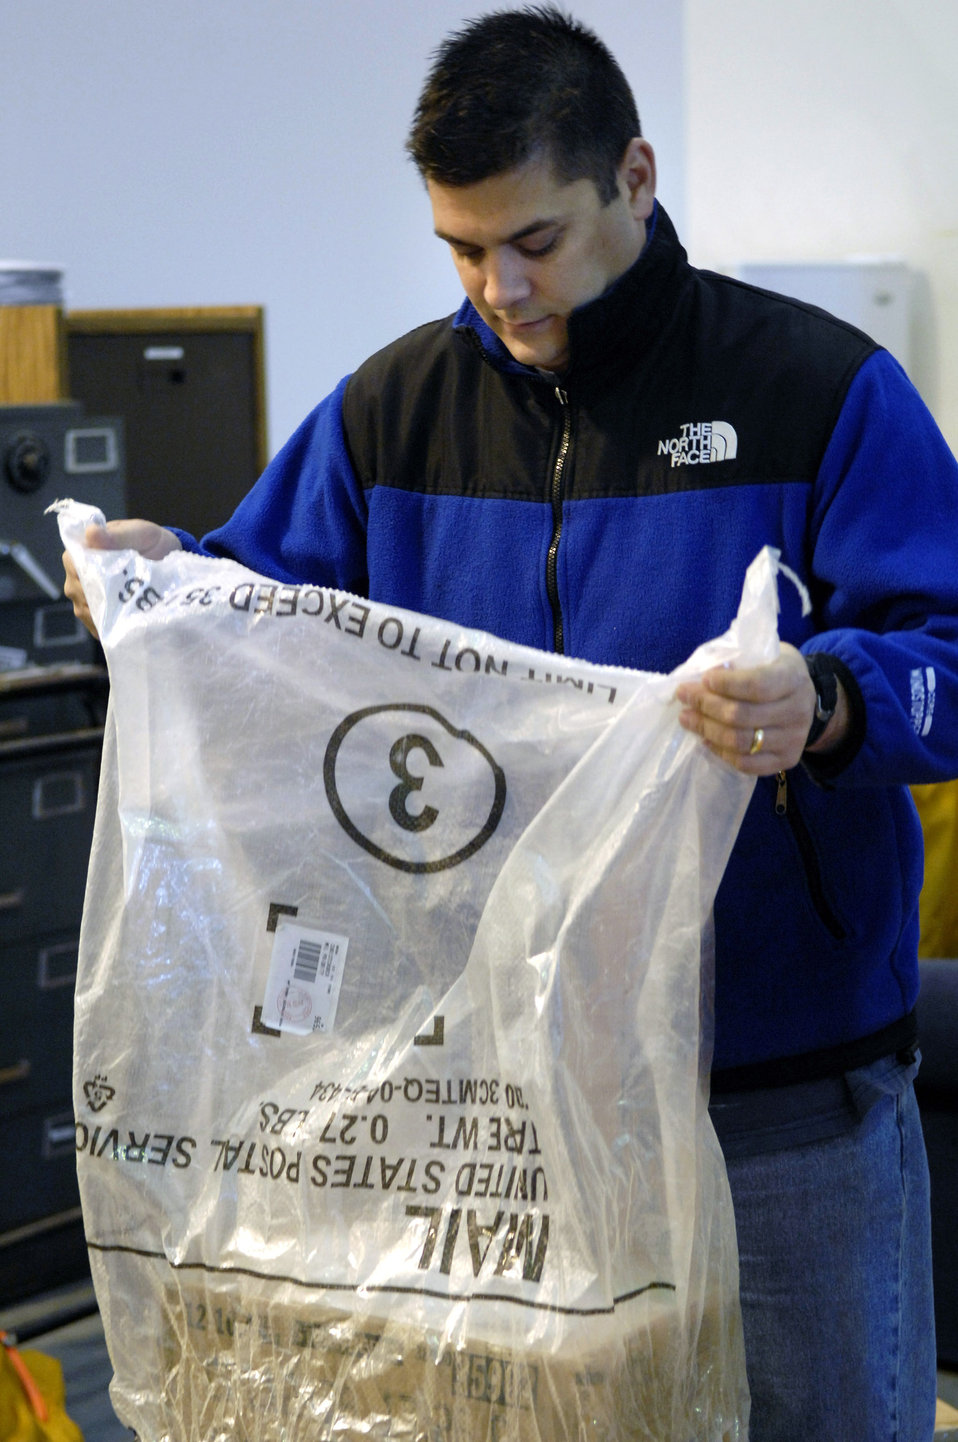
Neither snow nor deep freeze keep mail from Antarctica

Tech. Sgt. Chad Hartley sorts mail for Operation Deep Freeze members Aug. 23 at Christchurch, New Zealand. Members of Det. 4, Pacific Air Forces Air Postal Squadron process all mail coming in and out of Antarctica and can handle up to 240,000 pounds of mail during Operation Deep Freeze. Sergeant Hartley is the incoming postmaster for Det 4.